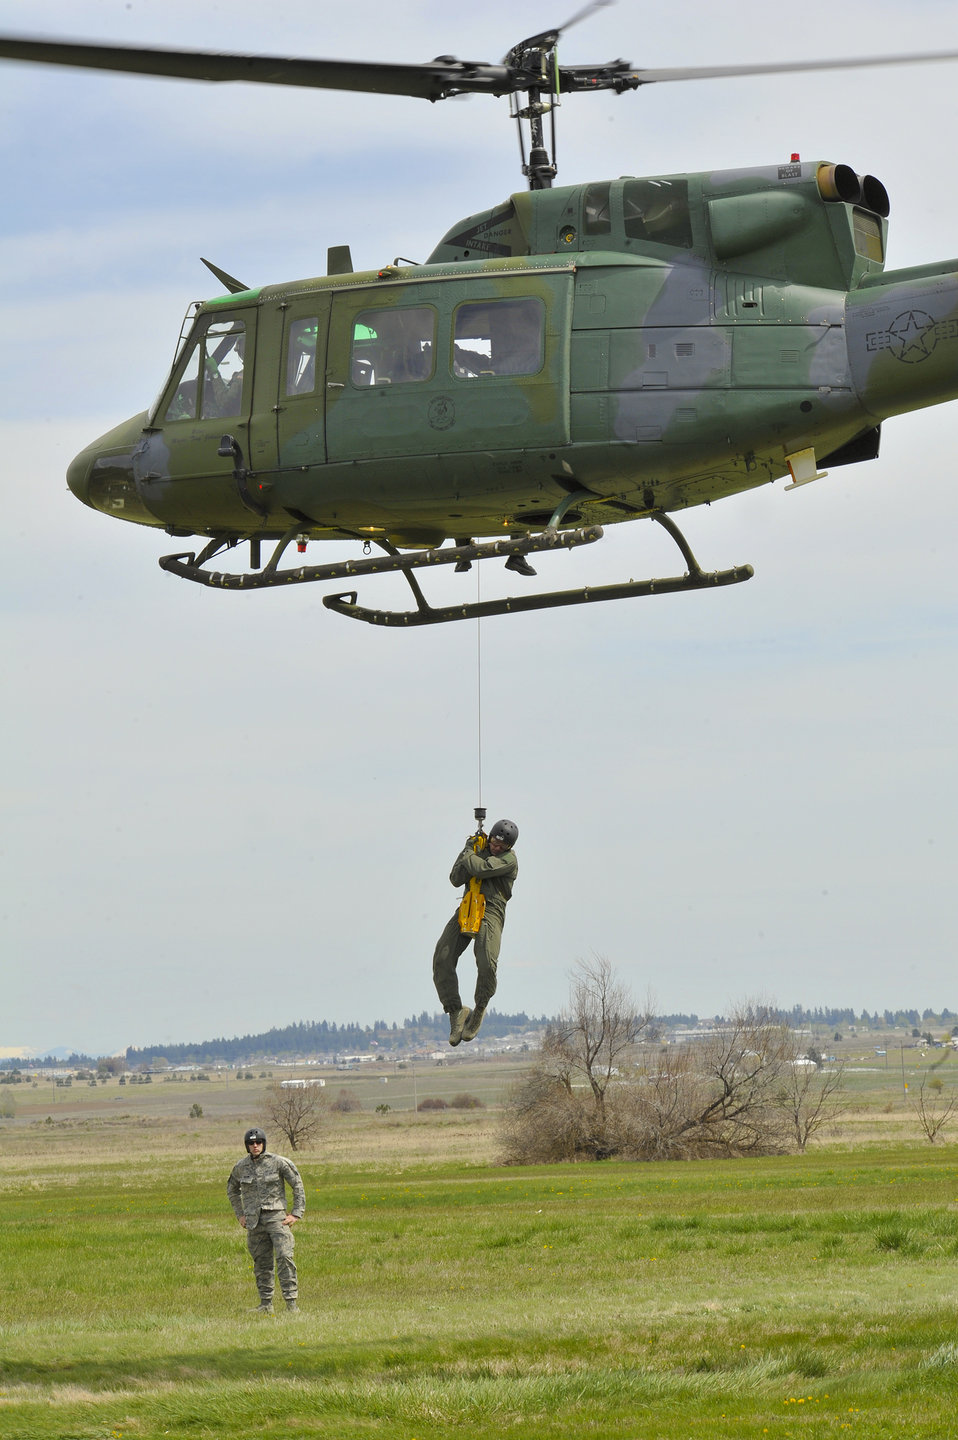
Going up!

A Survival Evasion Resistance Escape instructor observes as a student uses a forest penetrator to board a helicopter May 14, 2011, at Fairchild Air Force Base, Wash.